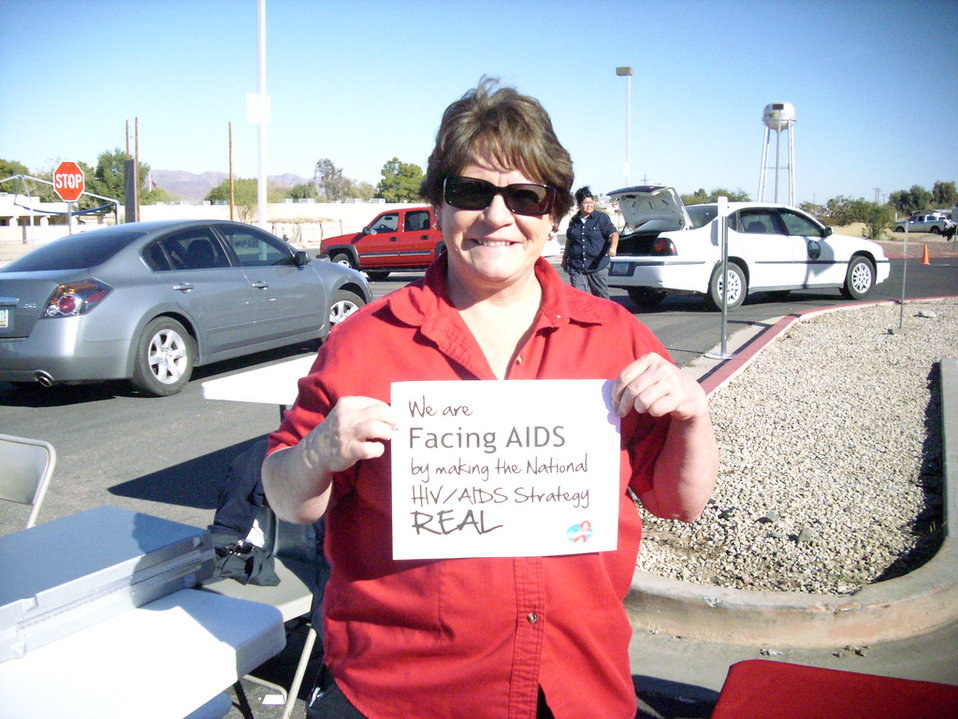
We are Facing AIDS through NHAS-15